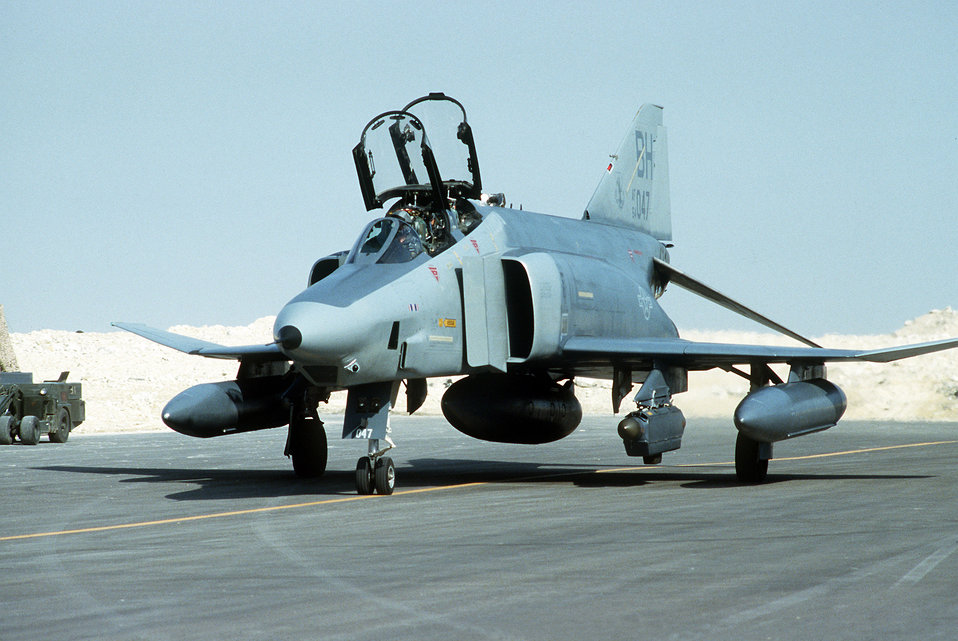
RF-4C Phantom II

1990s -- An RF-4C Phantom II reconnaissance aircraft of the 117th Tactical Reconnaissance Wing is parked at an airfield following a mission on the first day of Operation Desert Storm.